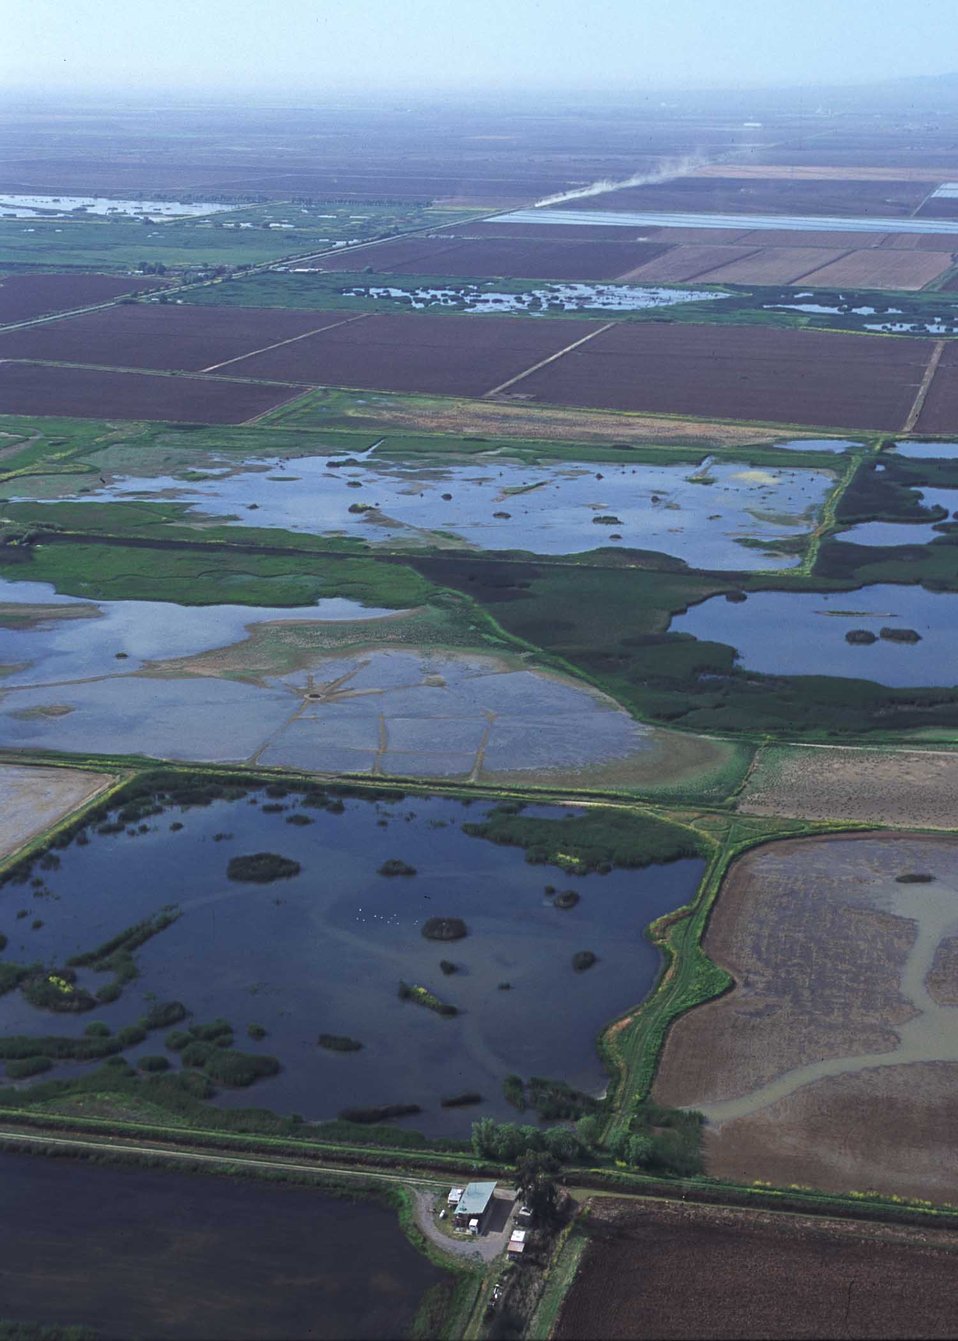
Aerial of wetlands in Butte County, CA.